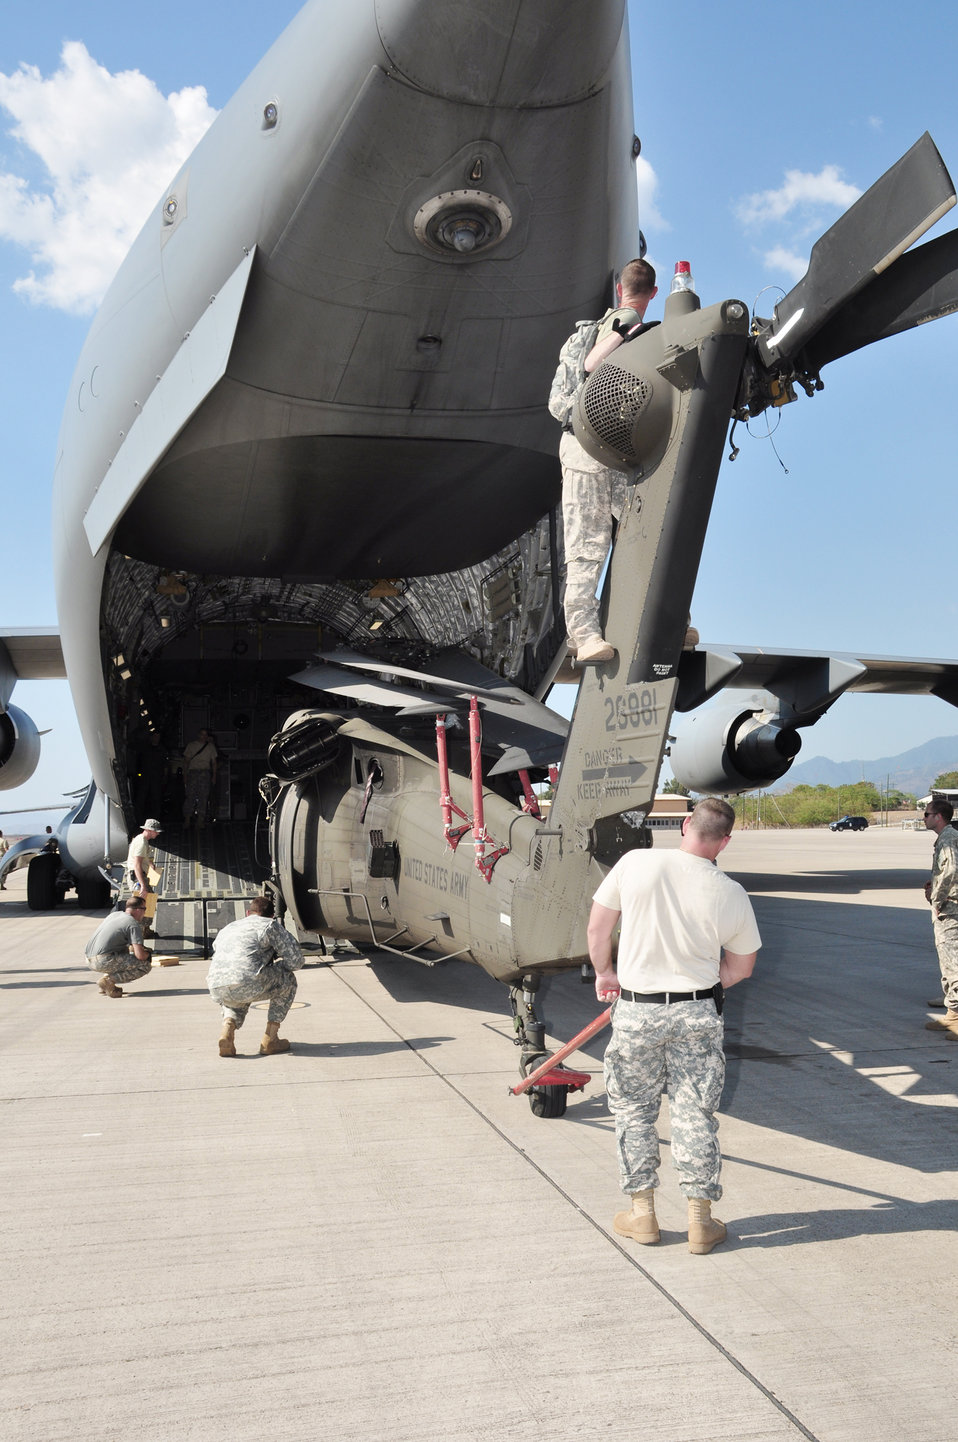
American servicemembers, helicopters deploy to Haiti

Joint Task Force-Bravo members load a C-17 Globemaster III March 20 with the first of three UH-60 Blackhawks that were loaded in a single aircraft March 20, 2010, at Soto Cano Air Base, Honduras. Soto Cano AB officials sent more than 180,000 pounds of equipment and 40 servicemembers to support Joint Task Force-Haiti's disaster relief mission, Operation Unified Response.